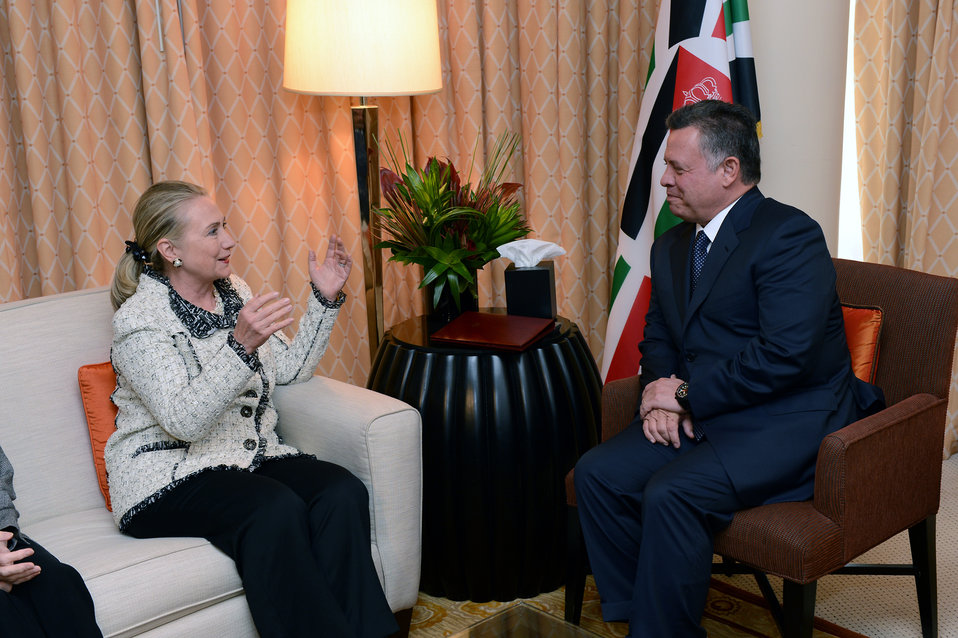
Secretary Clinton Meets With Jordanian King Abdullah II

U.S. Secretary of State Hillary Rodham Clinton meets with Jordanian King Abdullah II in New York, New York on September 26, 2012.